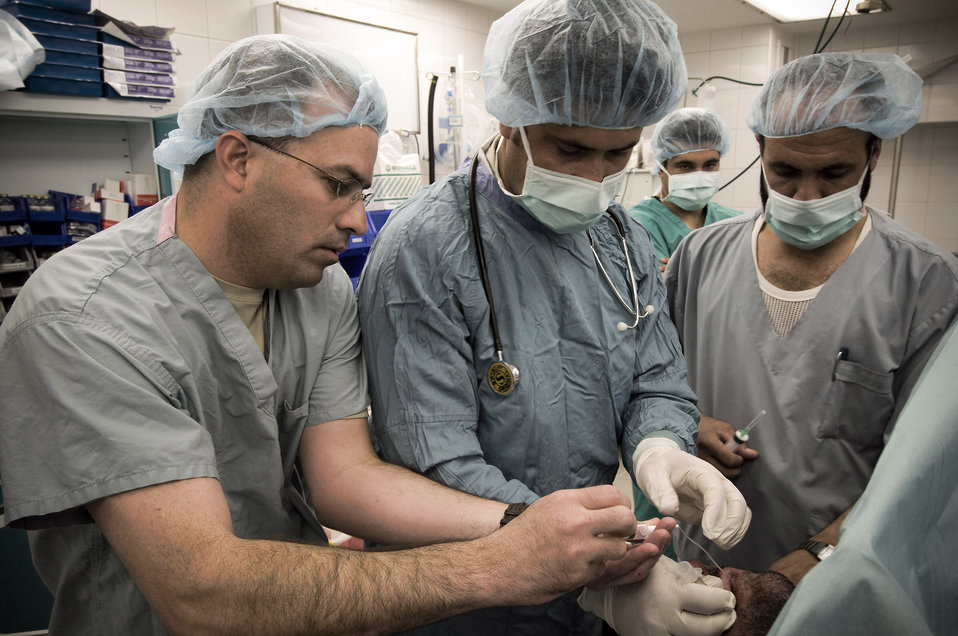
Airmen help build Afghan military medical capability

Maj. Elvin Cruz (left) helps Afghan National Army nurse anesthetists prepare a patient for surgery Oct. 27 at the Kandahar Regional Military Hospital in Afghanistan. Major Cruz is deployed from Lackland Air Force Base, Texas, and a native of Arecibo, Puerto Rico. Major Cruz is an anesthesiologist with the 205th Afghan Regional Security Integration Command embedded training team.